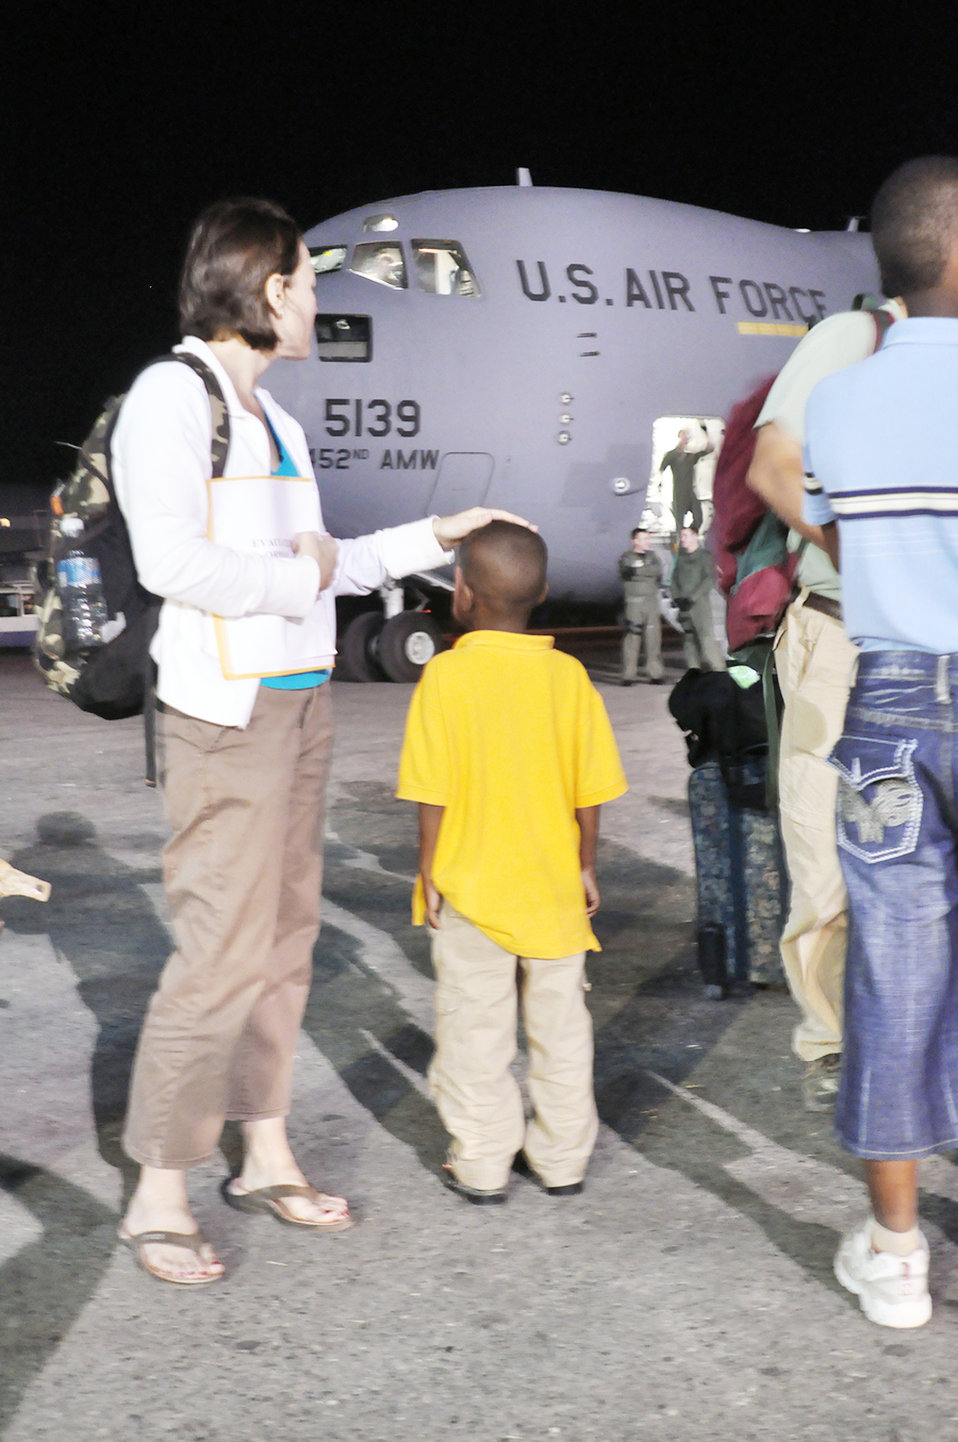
Hill Airmen offer help, hope to Haiti

Erin Pemungia and her newly adopted 7-year-old son, Noah, wait to board a C-17 Globemaster III Jan. 22, 2010, at Port-au-Prince, Haiti. The aircraft traveled to Haiti to deliver 15 people and equipment from the 67th Aerial Port Squadron, from Hill Air Force Base, Utah. The C-17 is from the 452nd Air Mobility Wing, March Air Force Base, Calif.